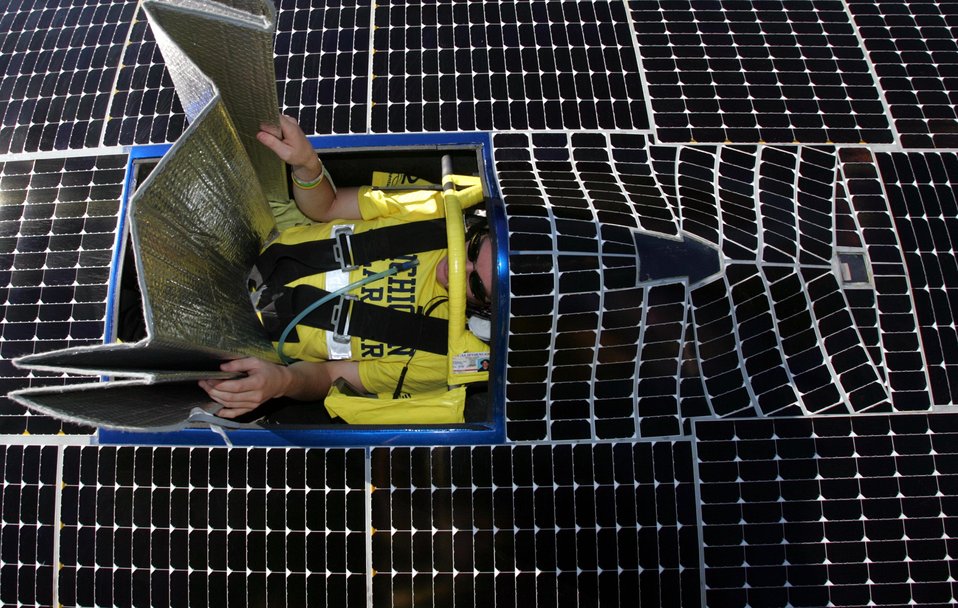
UNIVERSITY OF MICHIGAN DRIVER KEEPS COOL AS HE PREPARES TO LEAVE WINNIPEG, MANITOBA, CANADA DURING THE NORTH AMERICAN SOLAR CHALLENGE ON JULY 24, 2005.

THE 2005 NORTH AMERICAN SOLAR CHALLENGE (ASC) WAS A CROSS COUNTRY SOLAR RACE THAT WAS HELD JULY 17 TO 27, 2005. THE RACE STARTED IN AUSTIN, TEXAS AND FOLLOWED U.S. ROUTE 75 AND THE TRANS-CANADA HIGHWAY (HWY 1) TO CALGARY, ALBERTA, CANADA. TEAMS FACED VARIED CLIMATES, TOPOGRAPHY AND ROAD CONDITIONS. THE FIRST TIME THE WORLD'S LONGEST SOLAR CAR RACE WENT THROUGH THE U.S. AND CANADA.